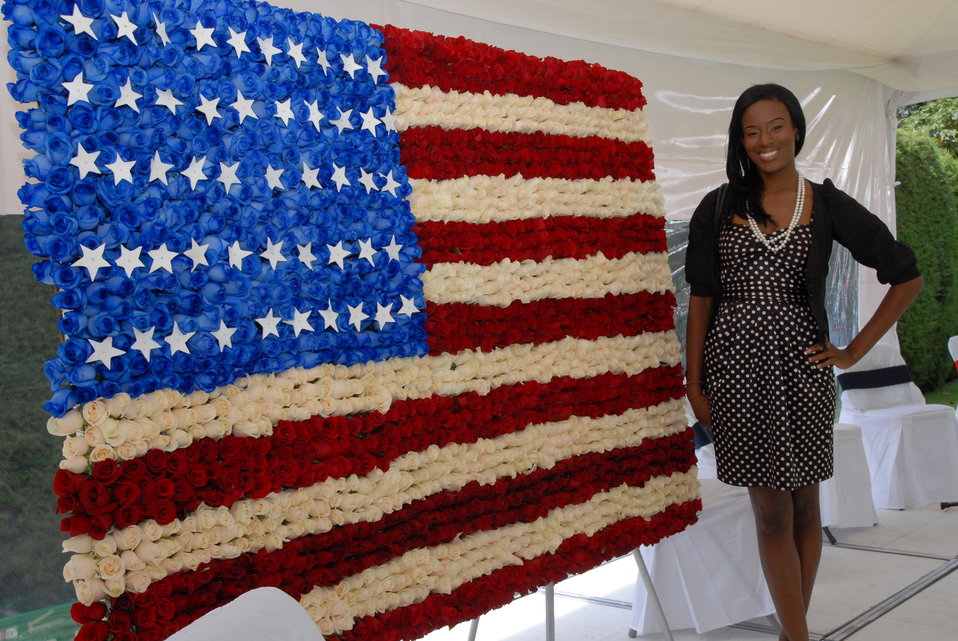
July 4th Celebration at U.S. Embassy in Ecuador

Krystle Norman, a Pickering Fellow, poses with an American flag made of Ecuadorian roses at U.S. Embassy Quito in Ecaudor's U.S. Independence Day celebration on July 2, 2010.